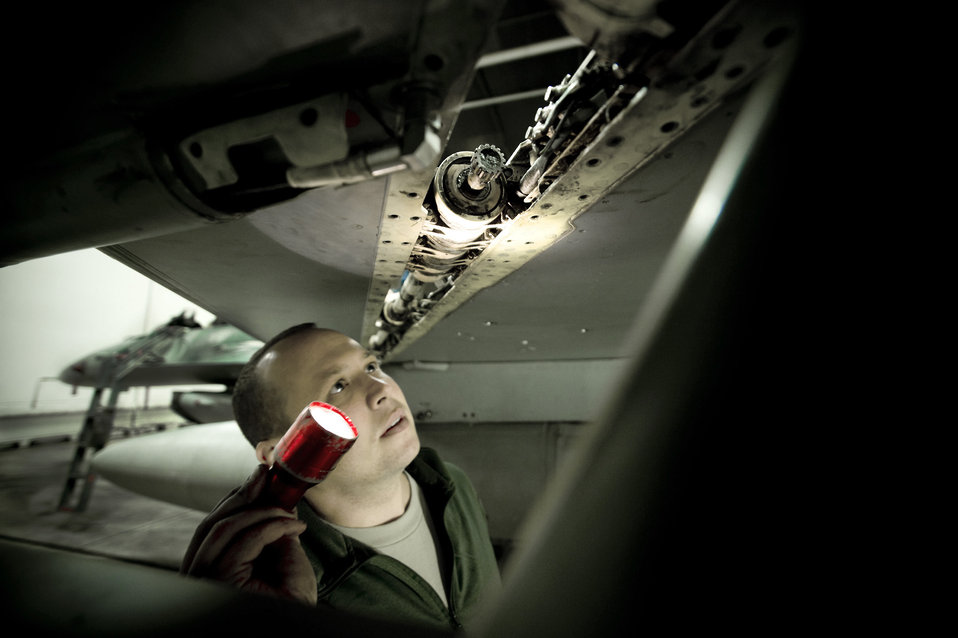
National Guard Airmen augment Misawa maintenance

Technical Sgt. Nathan Bechdolt inspects the leading edge flap of an F-16 Fighting Falcon March 6 at Misawa Air Base, Japan. Sergeant Bechdolt, an F-16 crew chief is one of 31 Airmen deployed from the Air National Guard's 122nd Fighter Wing from Fort Wayne, Ind., to help the 35th Aircraft Maintenance Squadron during a low-manning period.